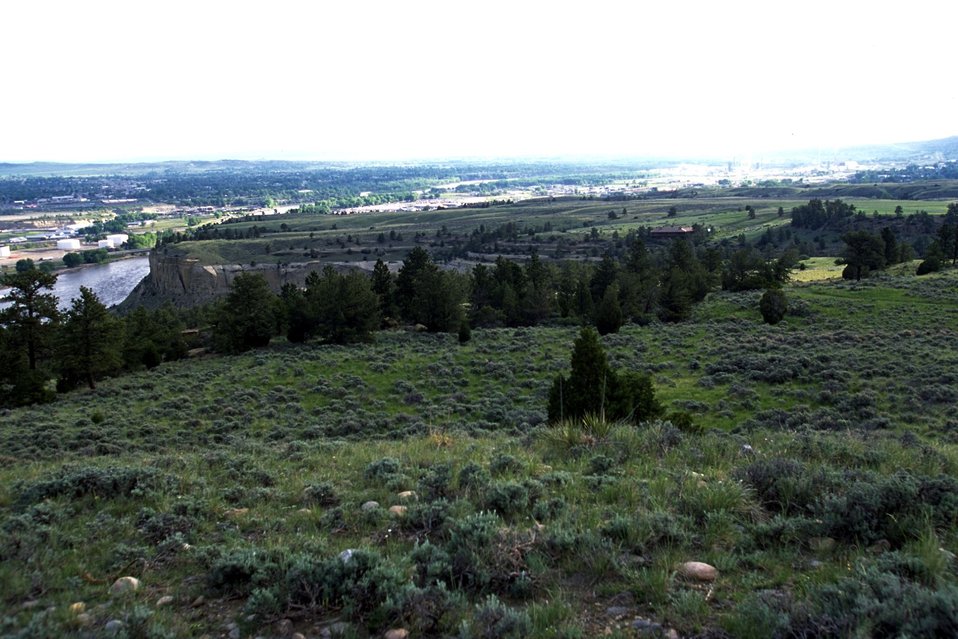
Upper portions of the bluffs looking northeast with Yellowstone River to the left in the Four Dances Natural Area